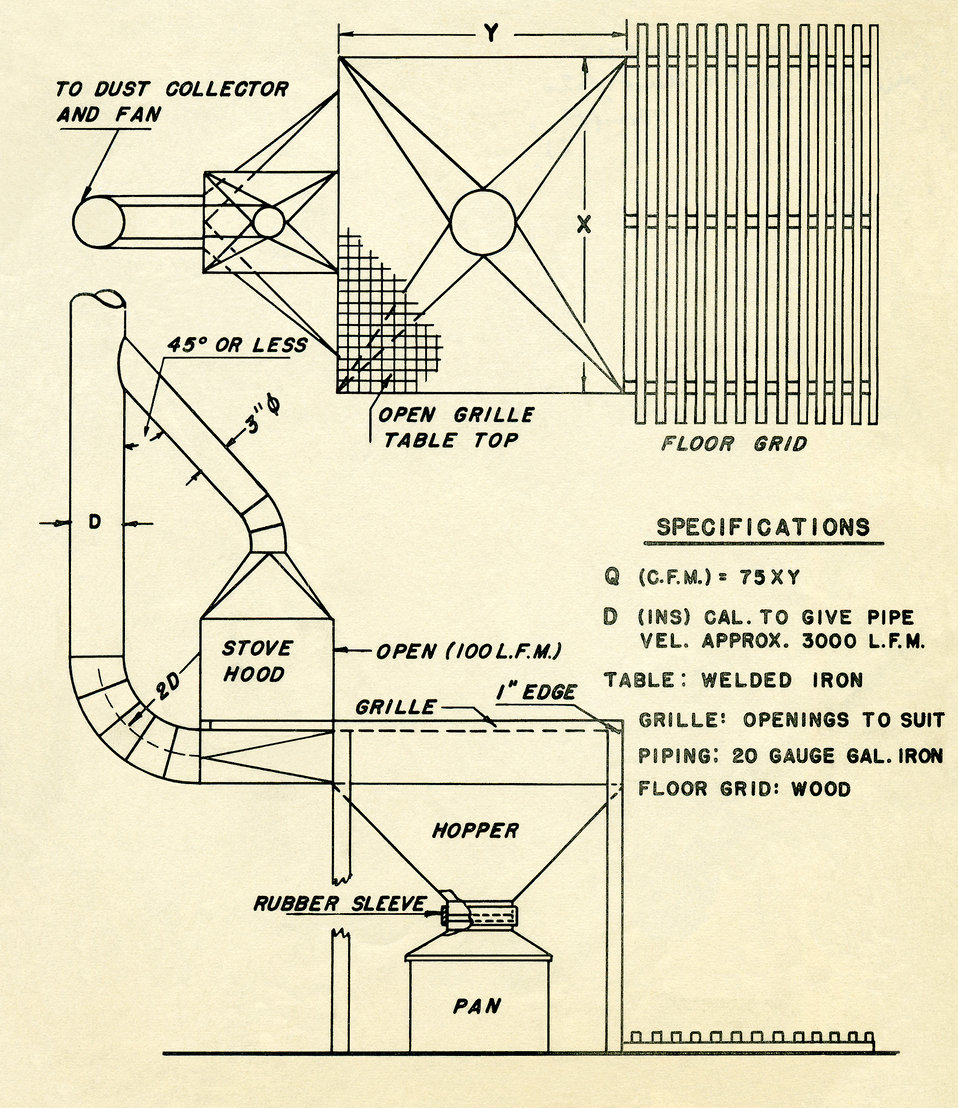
This historical drawing, provided by the Center for Disease Control's (CDC), National Institute for Occupational Safety and Health (NIOSH), detailed a design for a foundry ventilating system, in which dust is a significant by-product of the foundry's activities. In the 1940s and 1950s, the Industrial Hygiene Division (IHD) investigated hazards associated with this and other activities involving workplace health hazards.